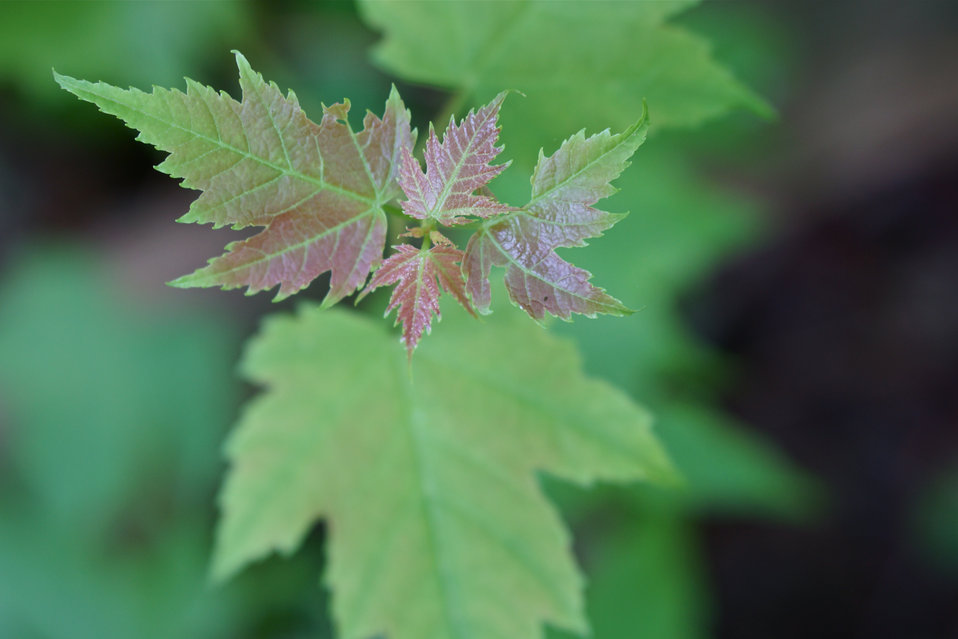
New maple leaves

In May, bog conservationists from Tennessee, North Carolina, and Georgia convened in the north Georgia mountains for the spring, 2014 meeting of the Bog Learning Network. The event provided an opportunity for biologists to see, first hand, the result of management efforts at two north Georgia bogs. More importantly, the outings provided an opportunity to share innovative approaches to bog management, such as the role of the Georgia Plant Conservation Alliance in conserving rare plants and coordinating a cadre of volunteers to work on bog management.

The Bog Learning Network was convened in the winter of 2013 as a way to bring together people working for bog conservation across the Southern Appalachians. Southern Appalachian bogs are one of North America’s rarest habitats and home to many rare plants and animals.